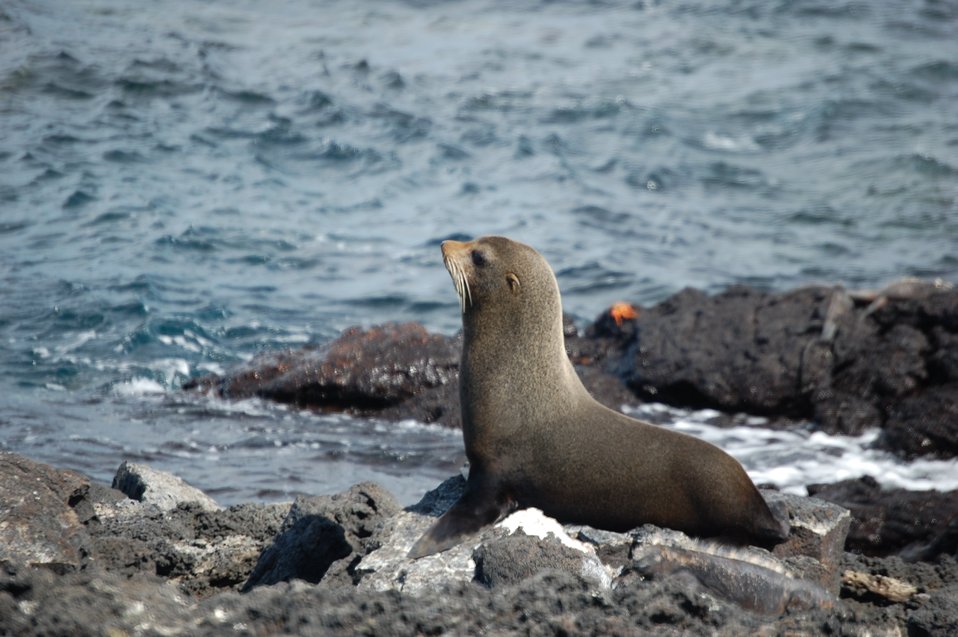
Fur seal.